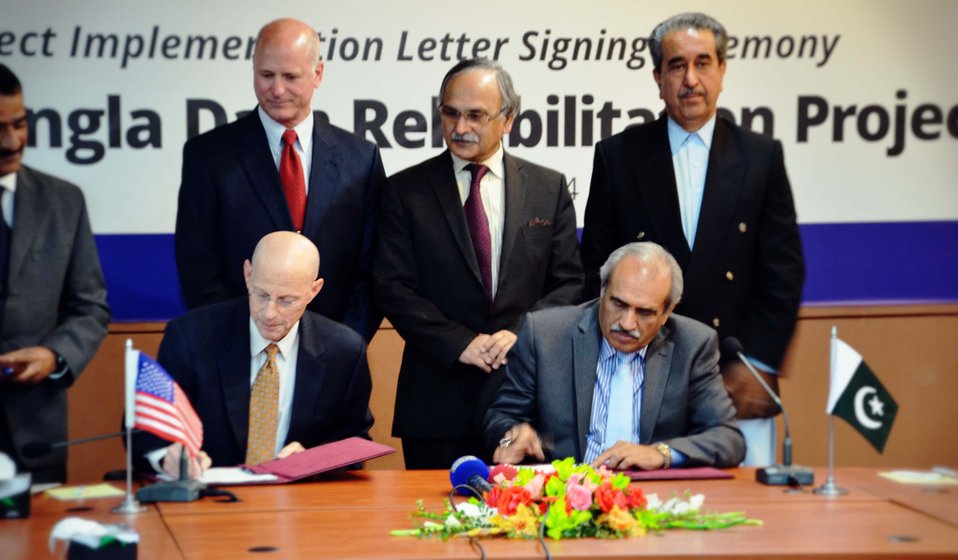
USAID Mission Director, Gregory Gottlieb and Chairman WAPDA, Syed Raghib Abbas Shah signing the implementation letter for rehabilitation of Mangla hydel power station